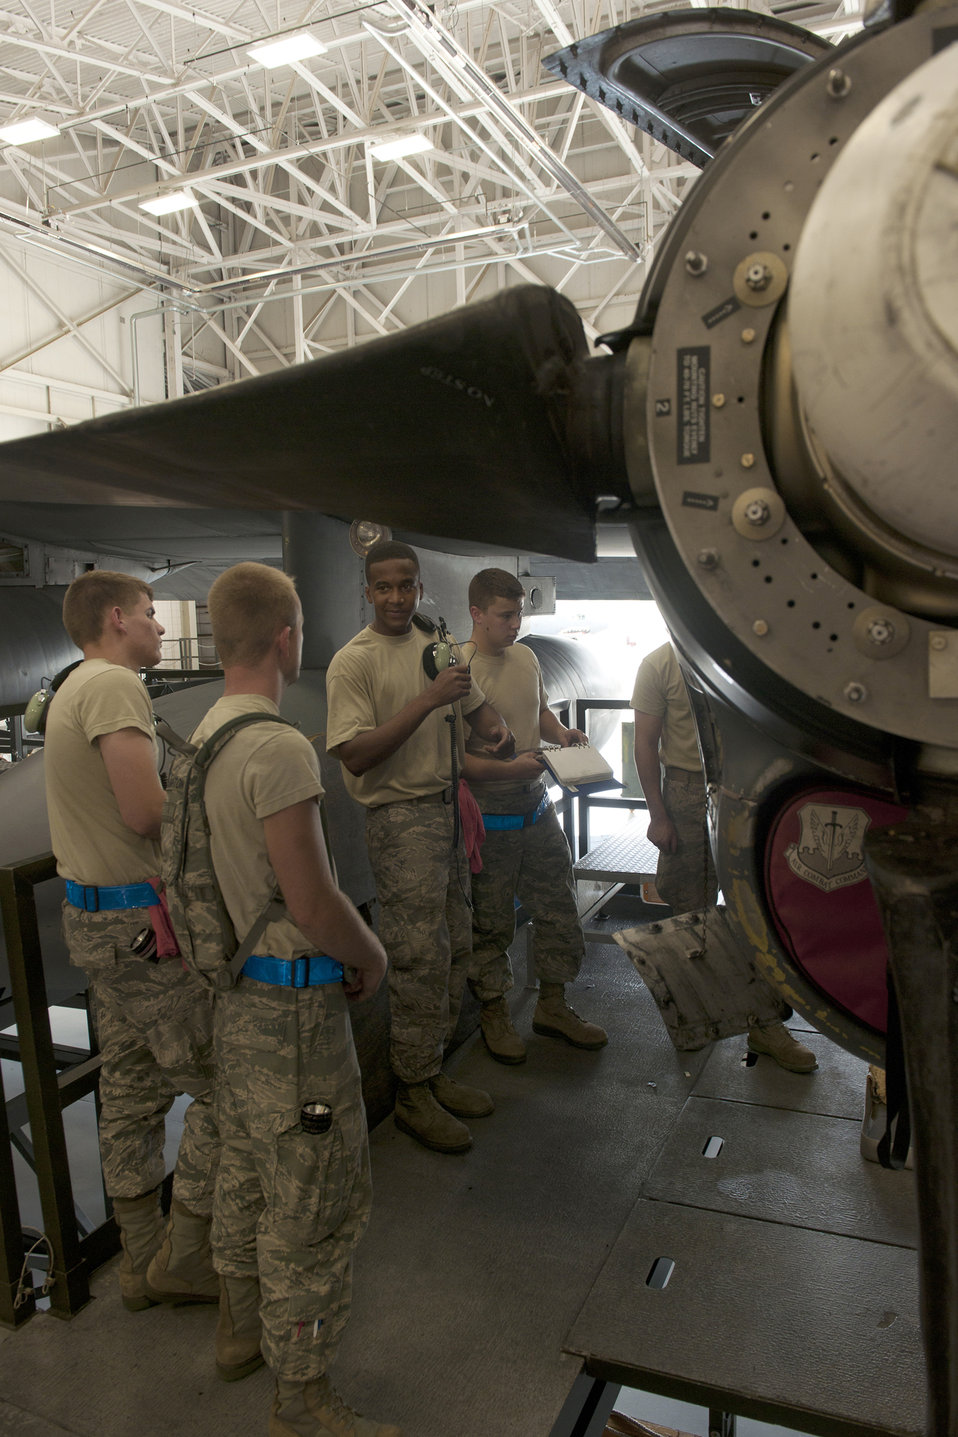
Inspection at Moody

Airmen gather around an engine June 20, 2011, during an HC-130P Combat King inspection at Moody Air Force Base, Ga.